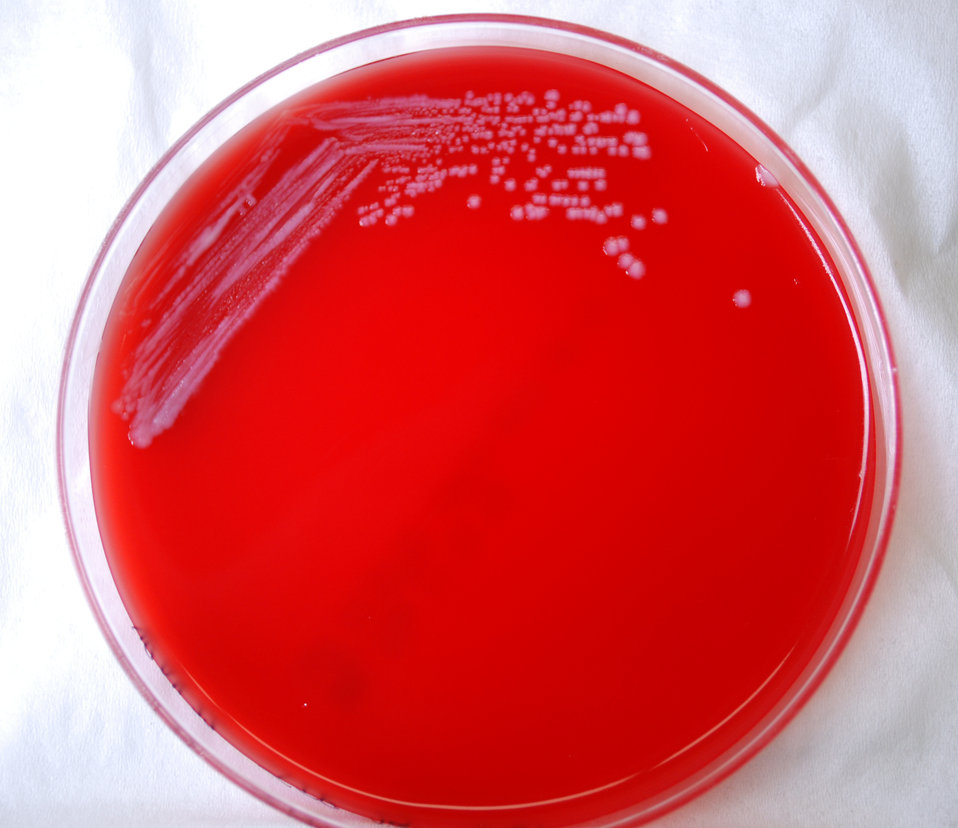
This photograph depicts the colonial morphology displayed by Gram-negative Yersinia pestis bacteria, which was grown on a medium of sheep's blood agar (SBA), for a 72 hour time period, at room temperature. For a closer view of these bacterial colonies, see PHIL 12266.Classification: